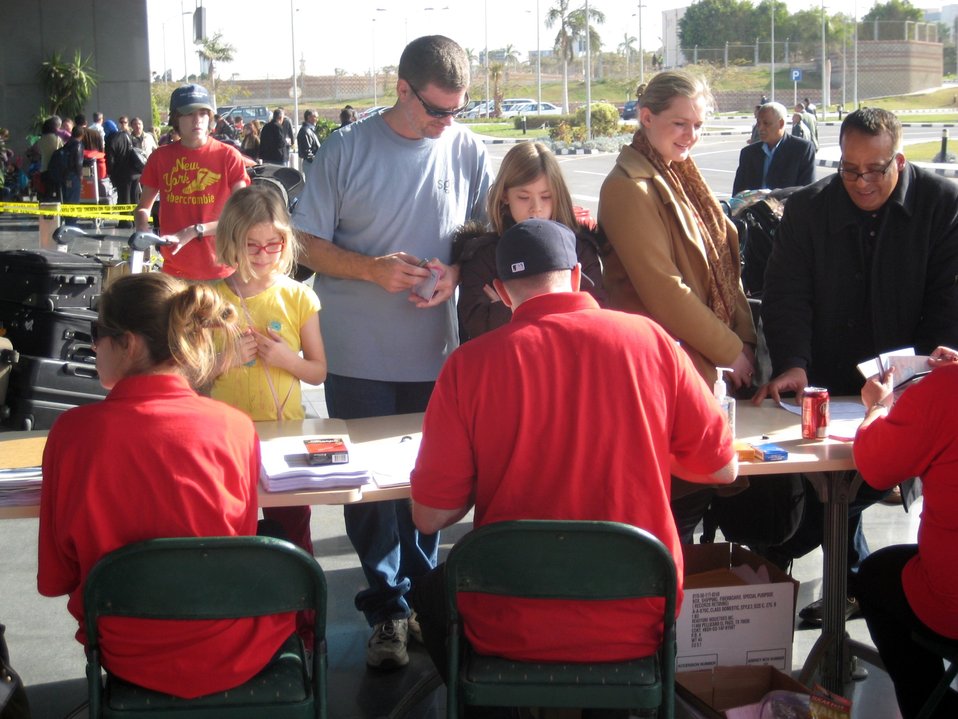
Embassy Cairo Officers Help American Citizens Evacuate Egypt

U.S. Embassy Cairo Consular Affairs Officers check documentation and process the paperwork for American citizens to return to the United States via a U.S. government chartered flight in Cairo, Egypt, on February 3, 2011.